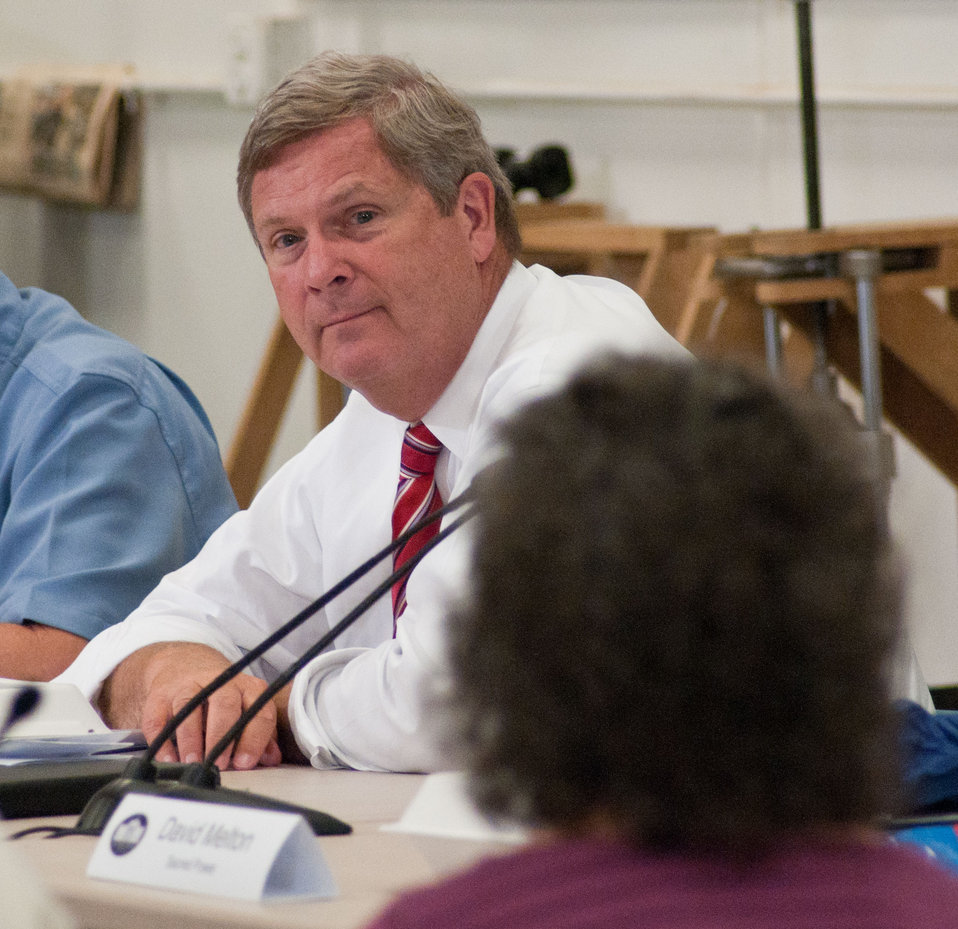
U.S. Department of Agriculture Secretary and chair of the White House Rural Council, Tom Vilsack, (right center) meets with Iowa stakeholders at the Northeast Iowa Community College, IA, during the White House Rural Economic Forum, on Tuesday, August 16, 2011.